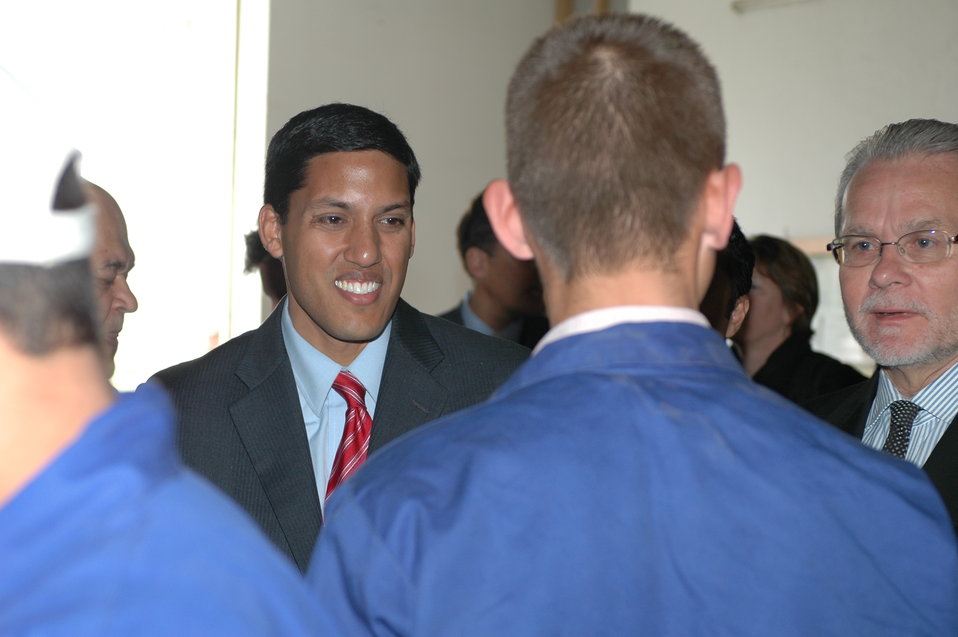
Dr Shah Visits Votech in Kabul